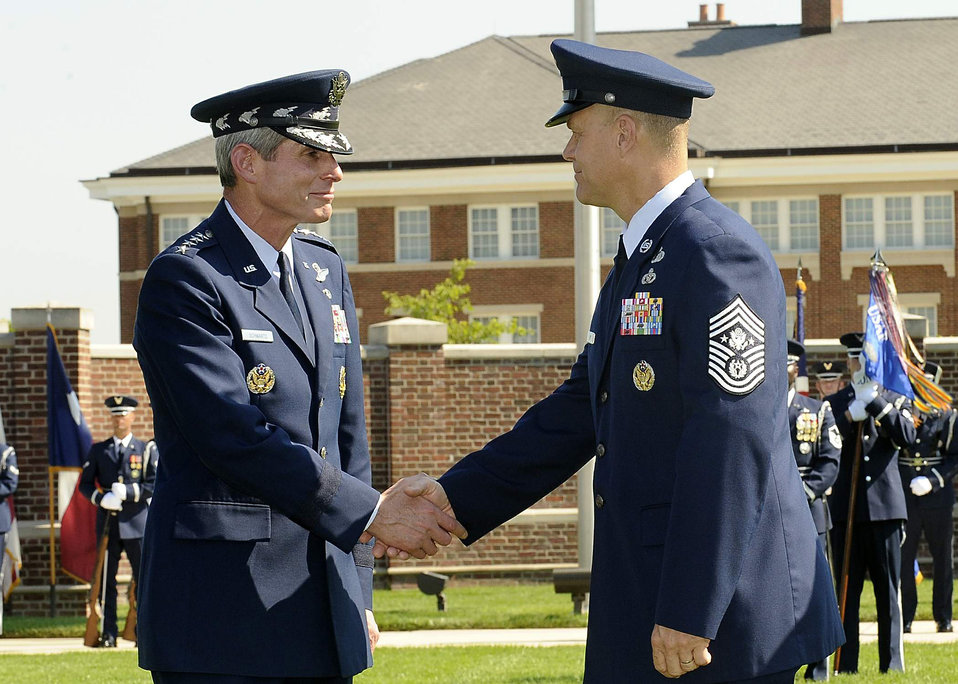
Air Force bids farewell to Chief McKinley, hails Chief Roy

Air Force Chief of Staff Gen. Norton Schwartz congratulates Chief Master Sgt. of the Air Force James A. Roy following his installment as the Air Force's top enlisted leader June 30 at Bolling Air Force Base, D.C. Chief Master Sgt. of the Air Force Rodney J. McKinley retired and Chief Roy was appointed as the Air Force's 16th top enlisted leader.